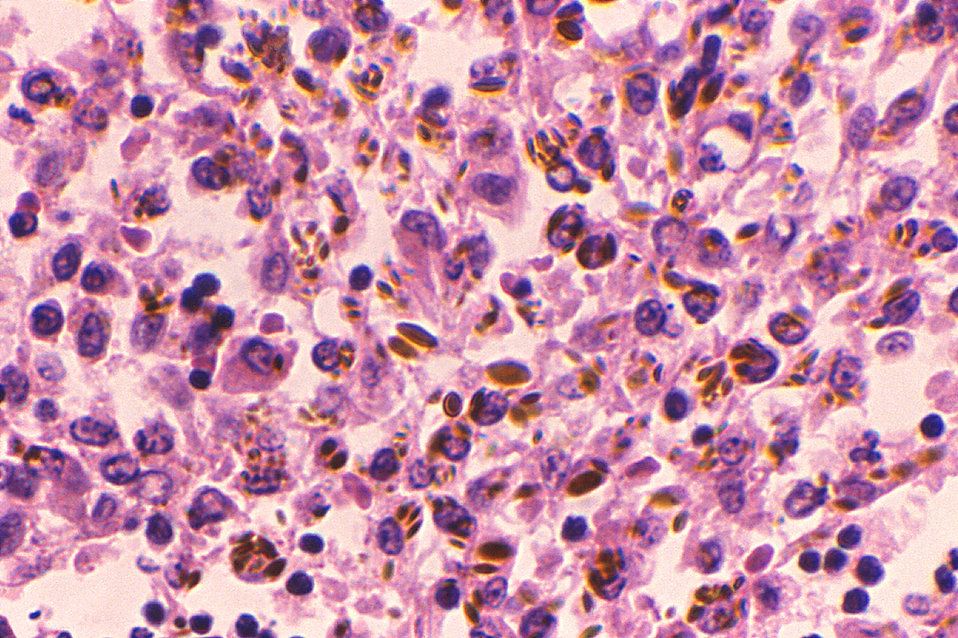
Hamazaki-Wesenberg bodies, lymph node